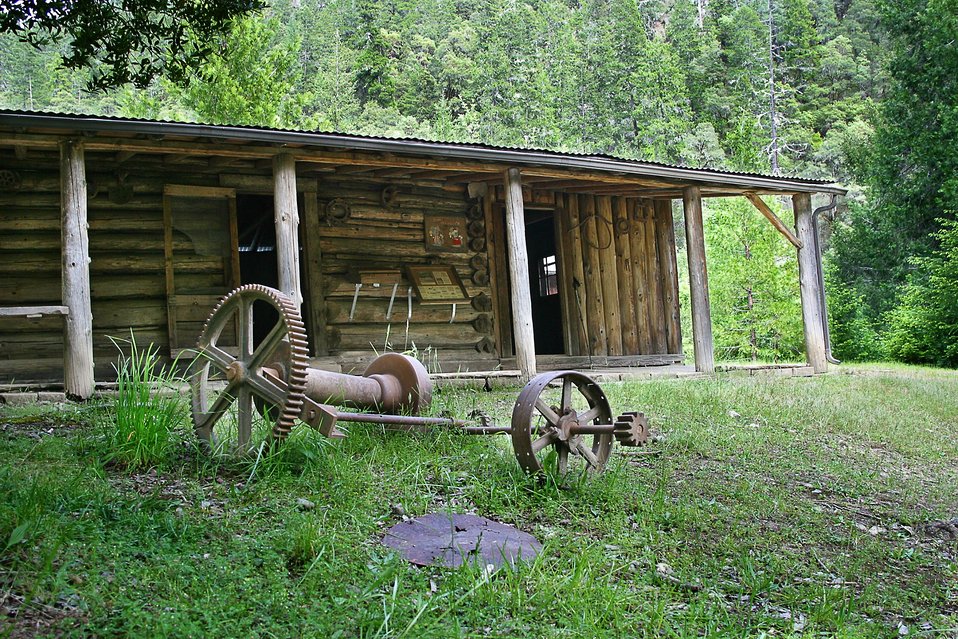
Whisky Creek Cabin along the Wild section of the Rogue River from Grave Creek to Foster Bar. 3100 cfs at Grants Pass and 5300 at Agness.